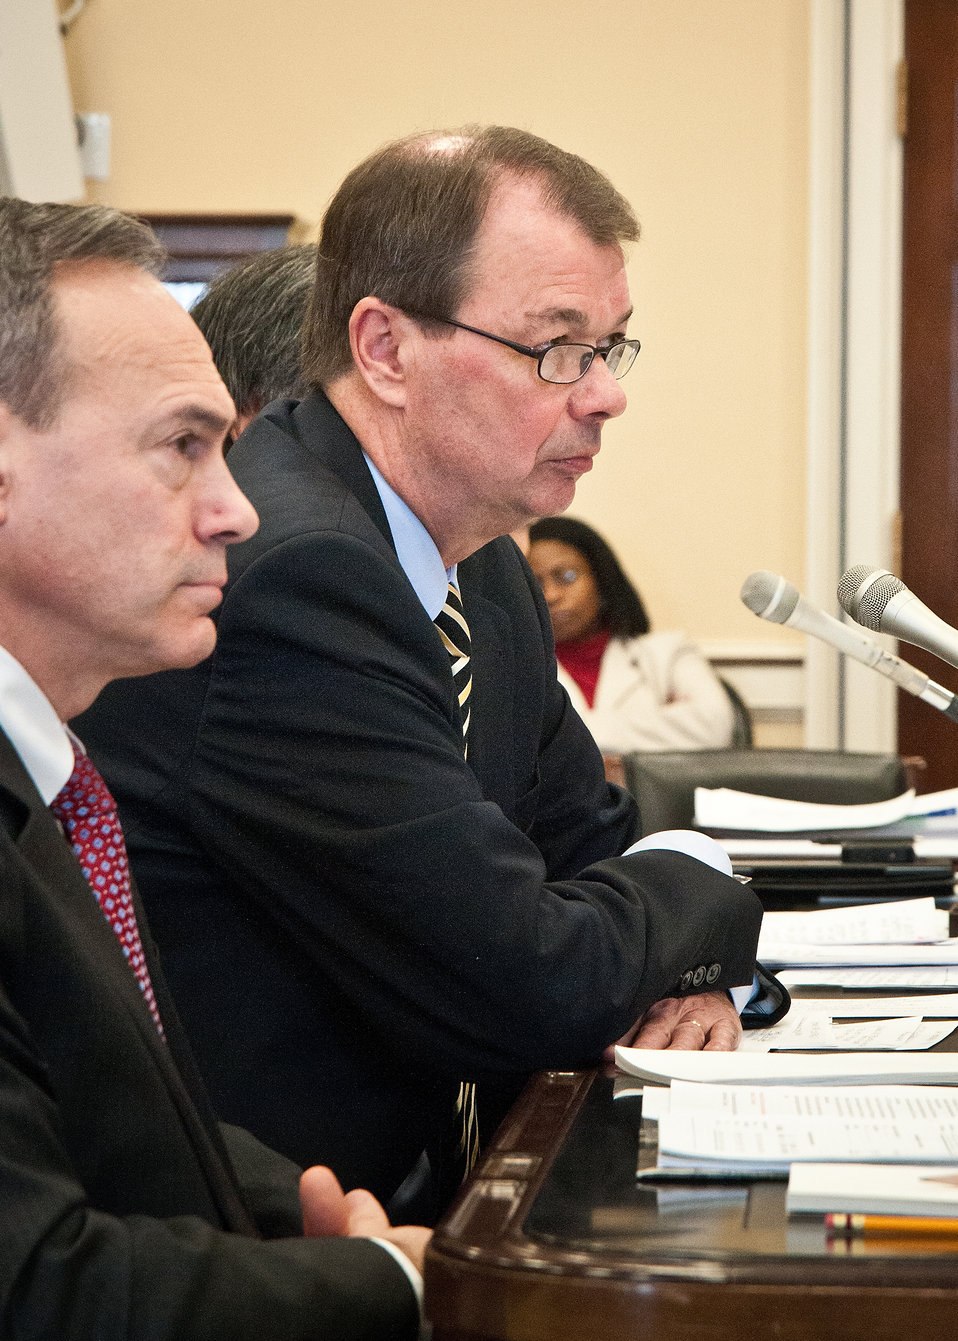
Robert Keeney (right), Acting Administrator, Agricultural Marketing Service and Alan Christian (left), Acting Administrator, Grain Inspection Packers Administration testifying on Capitol Hill with Ed Avalos (right), Under Secretary, Marketing and Regulatory Programs and representatives of the Marketing and Regulatory Program agencies on their fiscal year 2013 budget requests in Washington, D.C., Tuesday, March 6, 2012.